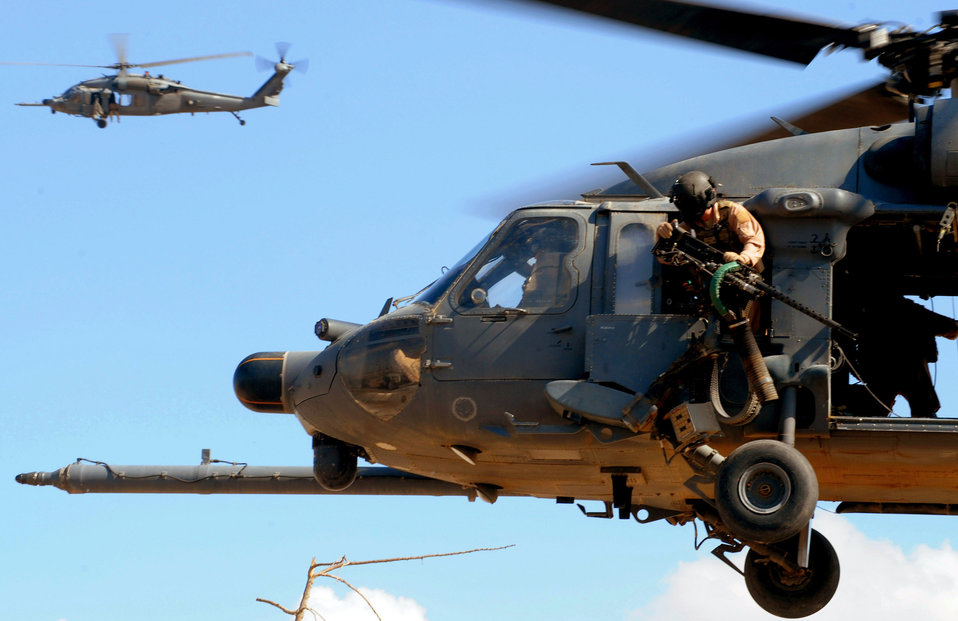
On patrol

An Airman mans a machine gun on from an HH-60 Pave Hawk helicopter during a proficiency exercise April 10 outside Baghdad, Iraq. The pararescueman is from the 64th Expeditionary Rescue Squadron at Joint Base Balad, Iraq.